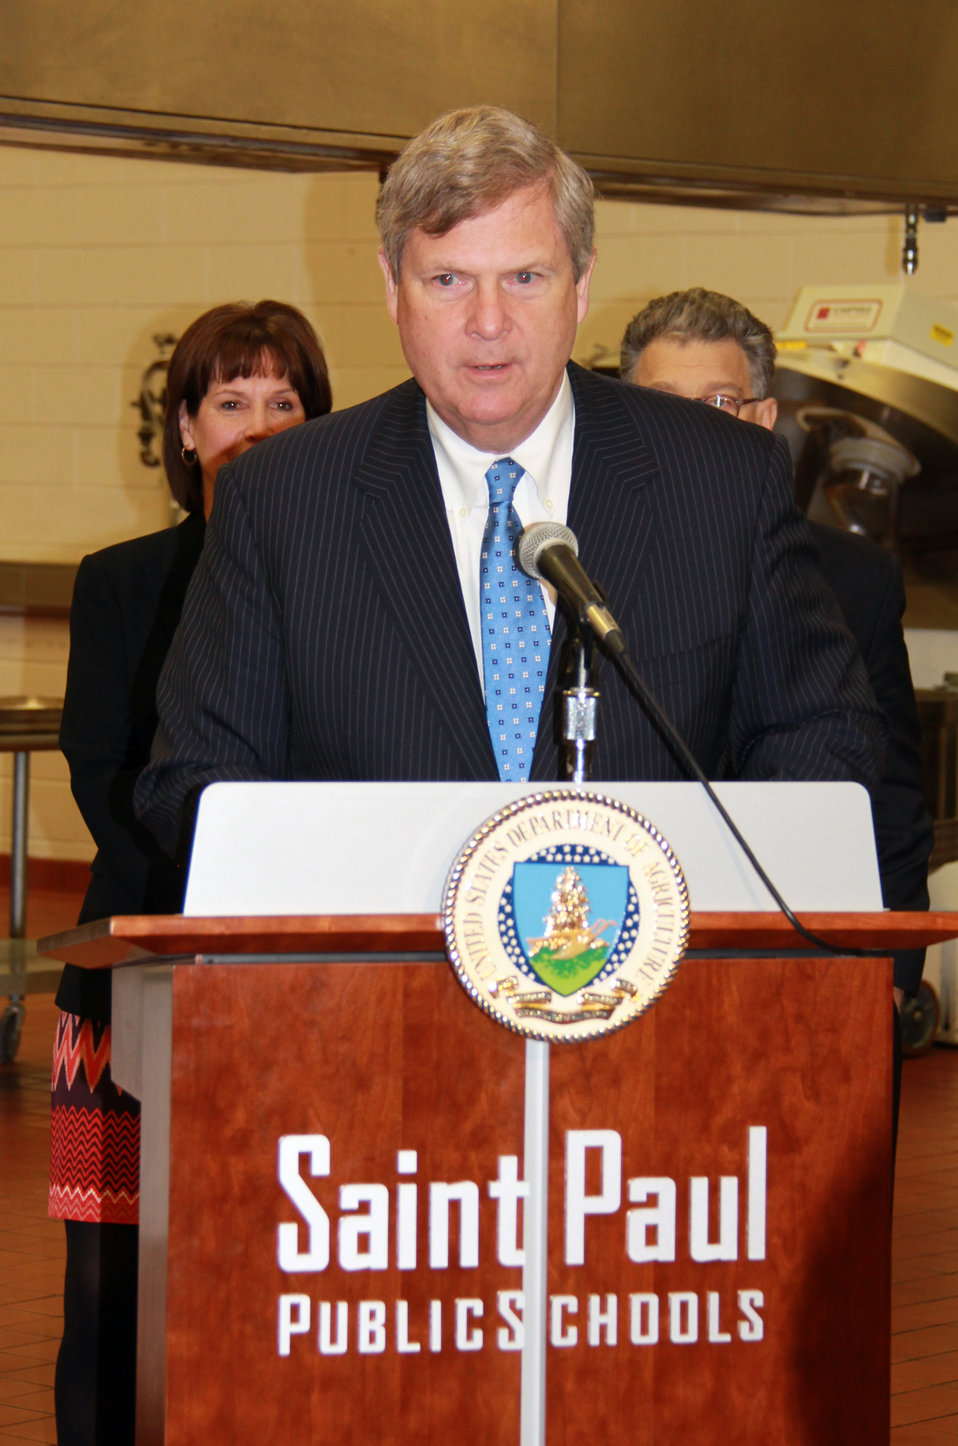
Agriculture Secretary Tom Vilsack speaks at the St. Paul public schools nutrition roundtable in St. Paul, MN on Apr. 18, 2014. (Congresswoman Betty McCollum (MN) and Senator Al Franken (MN) stand in the background).